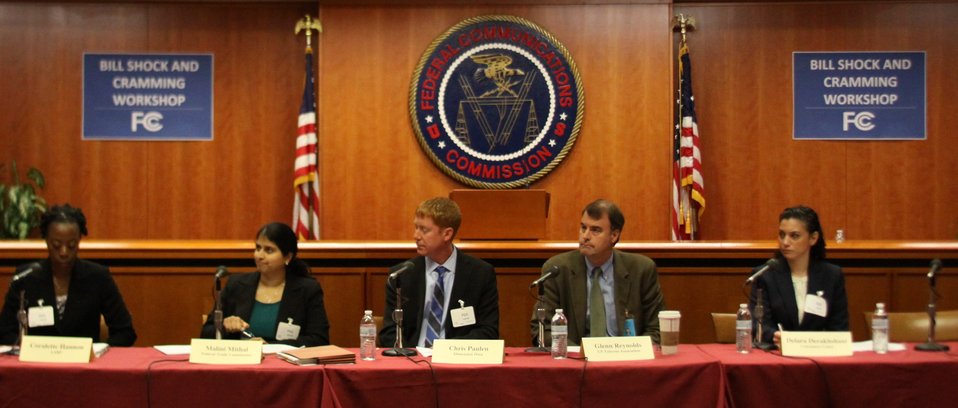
April 17, 2013 Bill Shock and Cramming Workshop Panel: How Cramming Occurs and What Consumers Can Do To Protect Themselves, Industry Efforts